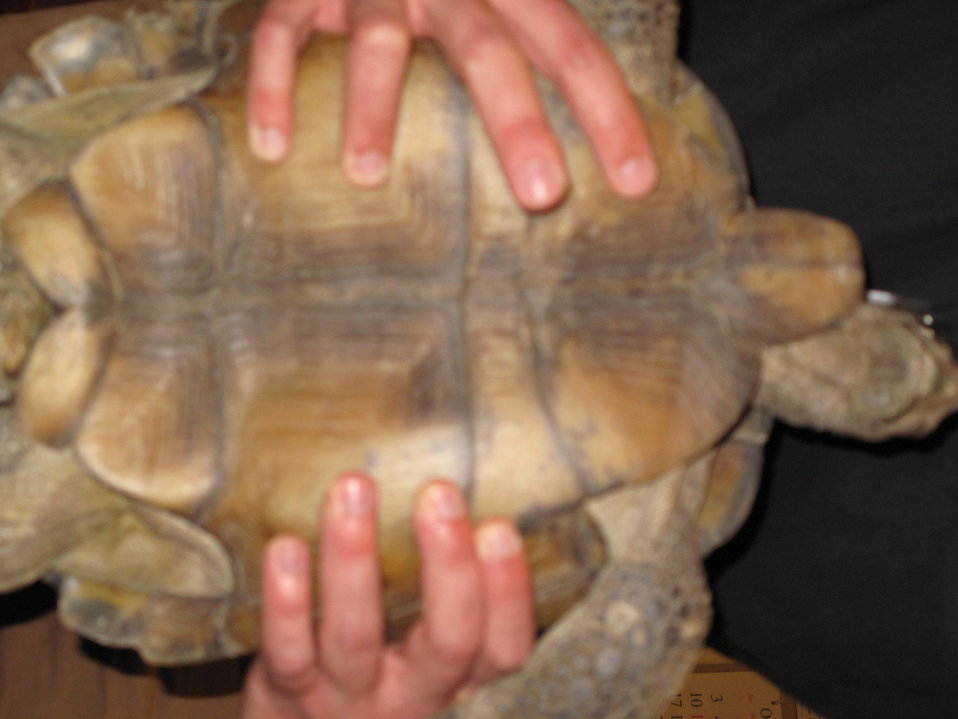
Crush the Desert Tortoise